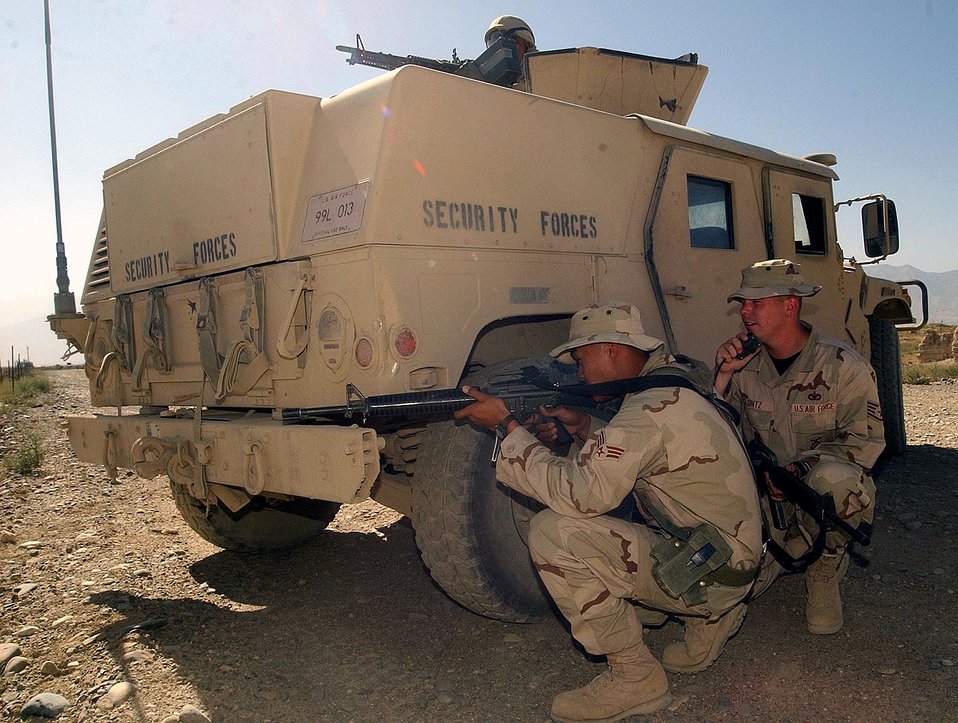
Defensive posture

BAGRAM AIR BASE, Afghanistan -- Senior Airman Zane Aguilar (left) practices a defensive posture behind an armored Humvee as Staff Sgt. Alan Clontz calls in on the radio. The airmen are assigned to the 455th Expeditionary Security Forces Squadron here. Hostile encounters are likely on the perimeter of the base here. Air Force security forces work with the Army to secure the base.